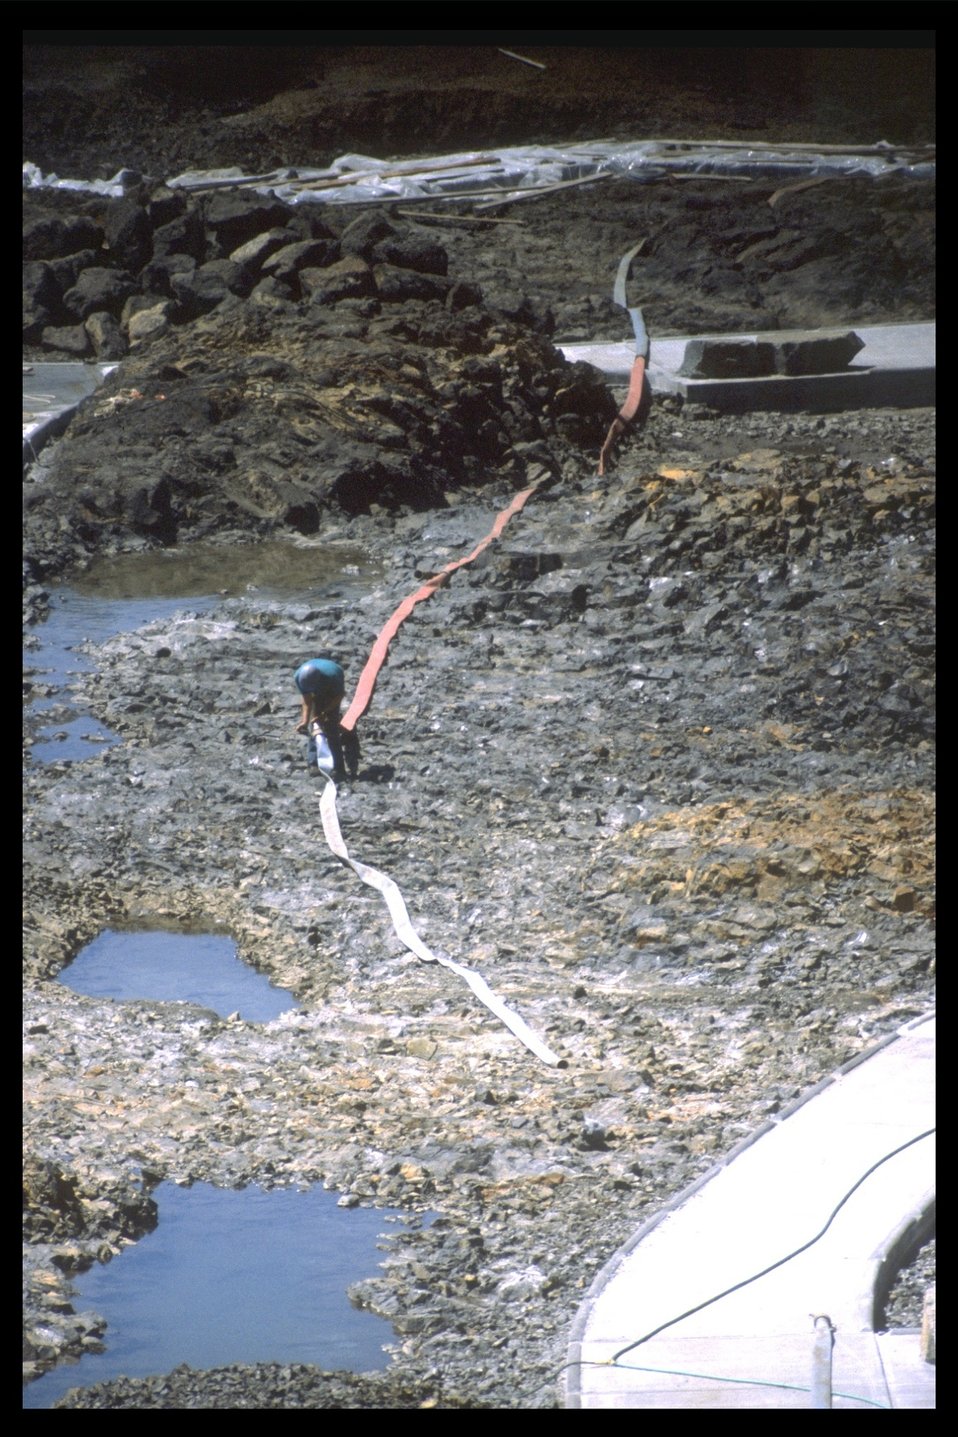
Construction of Quarry Cove tidepools.